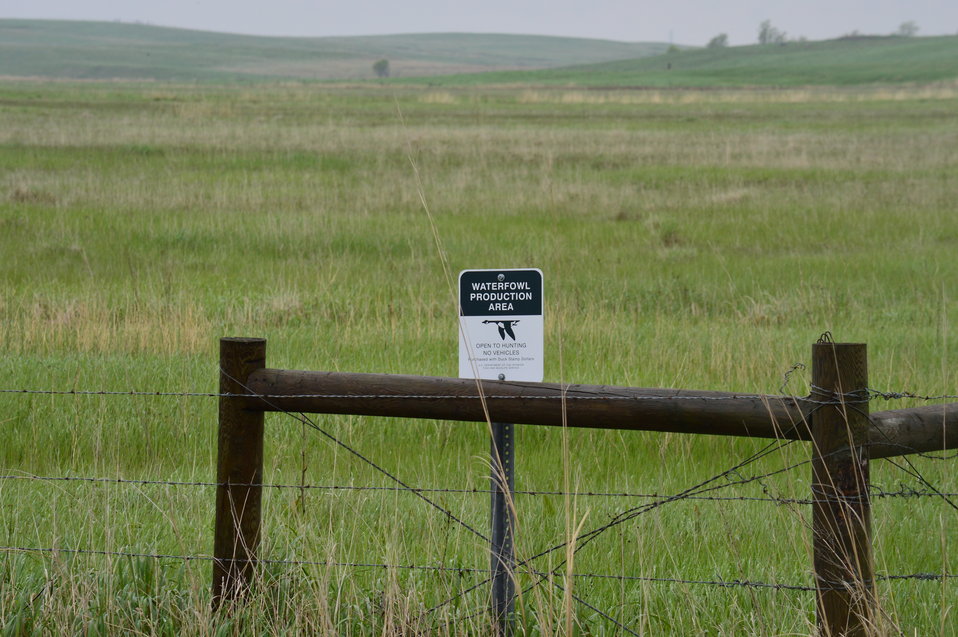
Waterfowl Production Area sign

Scenery and wildlife at Lost Lake National Wildlife Refuge in North Dakota.